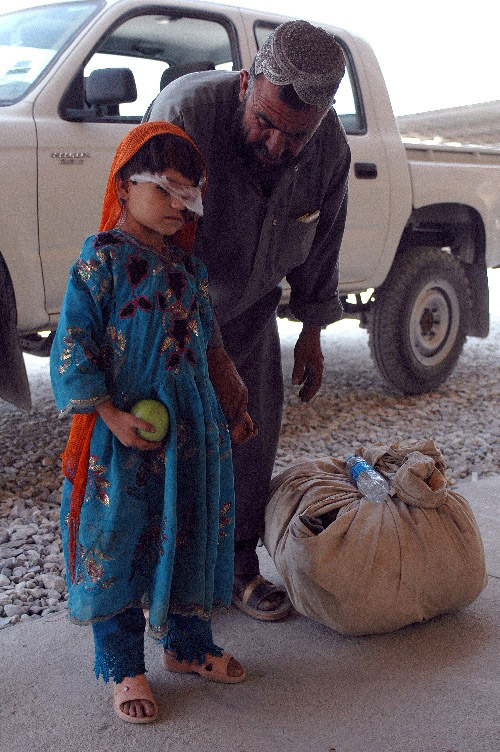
Coalition doctors remove tumor, save Afghan girl's life

Gulzana Haqim, a 6-year-old Afghan girl, and her father, Abdullah, arrive at Bagram Air Field, Afghanistan, July 9. Gulzana was treated for a tumor over her eye at Craig Joint Theater Hospital on Bagram, where her eye and possibly her life was saved by Coalition doctors.